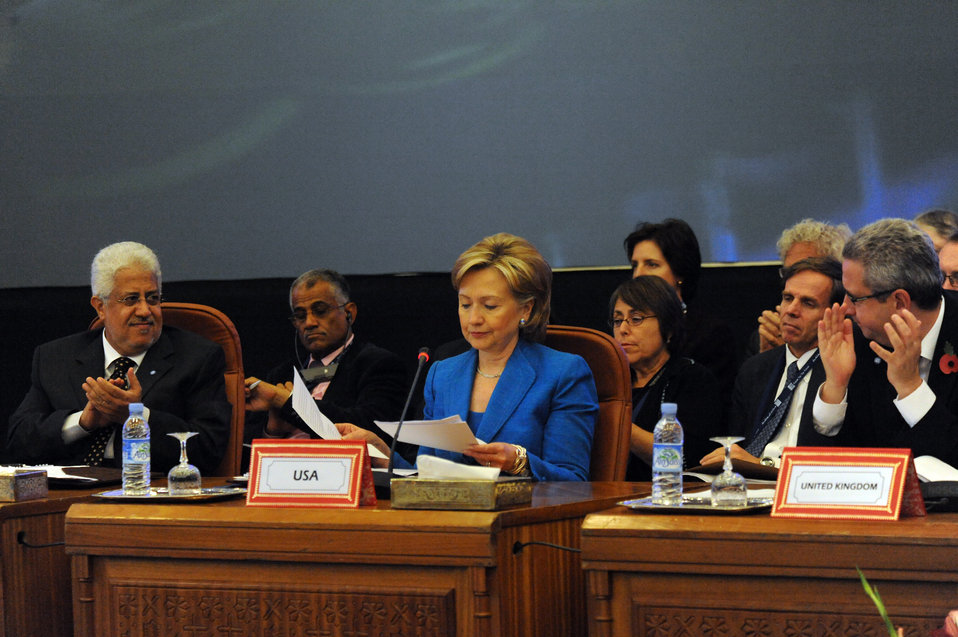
Secretary Clinton Attends 6th Forum for the Future

U.S. Secretary of State Hilllary Rodham Clinton attends the 6th Forum for the Future in Marrakesh, Morocco November 3, 2009.